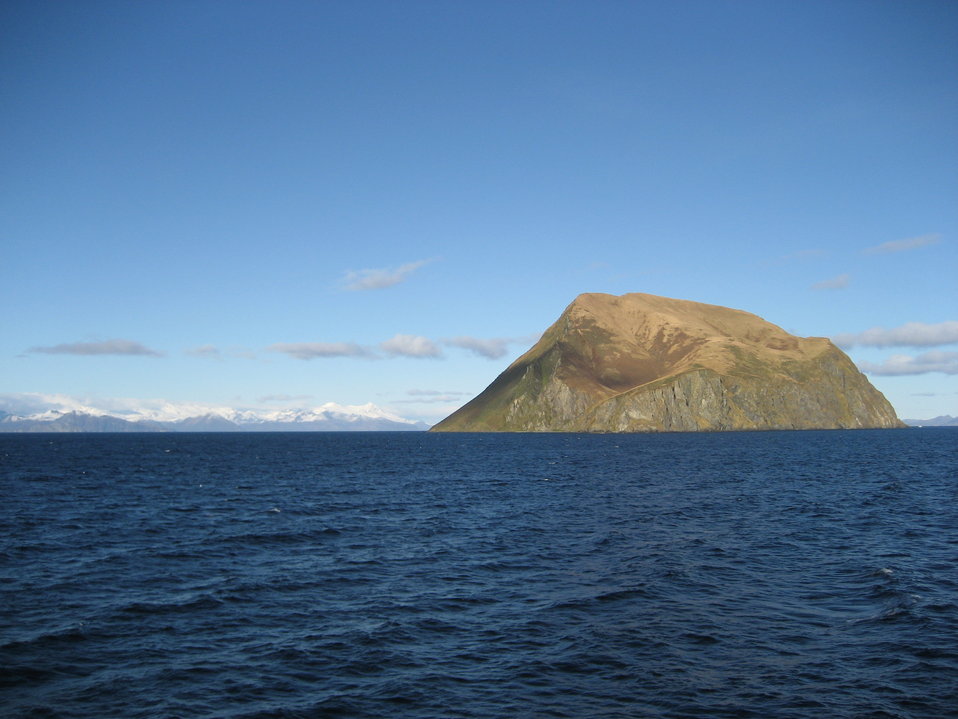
A small island off the Alaska Peninsula.